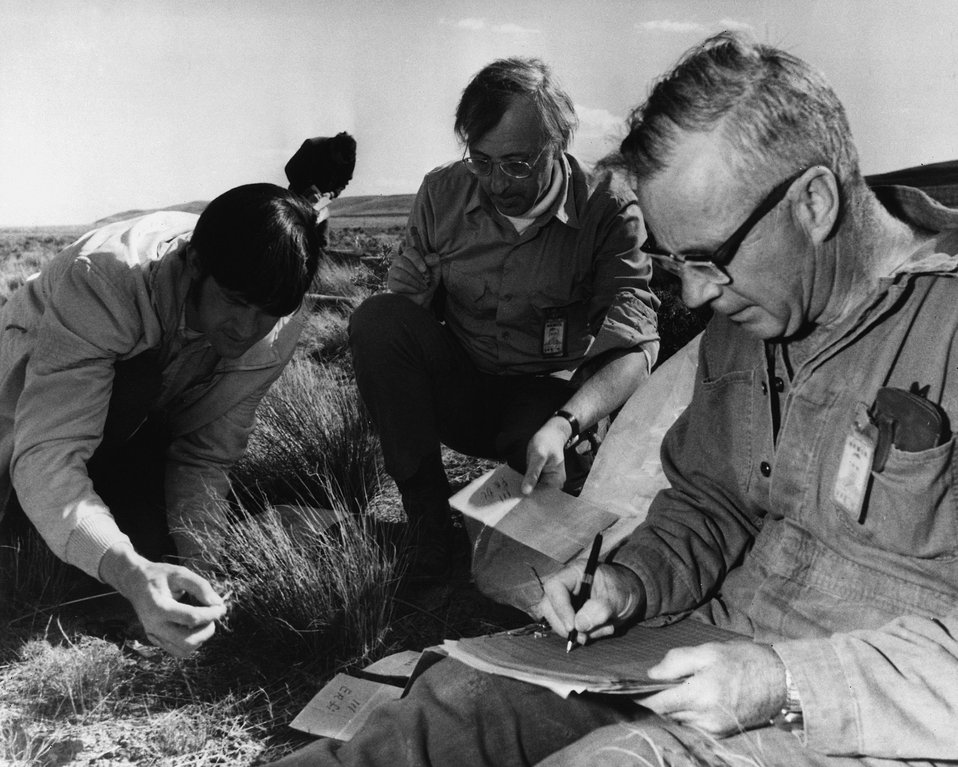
Scientists are studying plant vegetation productivity on the AEC's Arid Lands Ecology project, located near Hanford, Washington. c. 1973